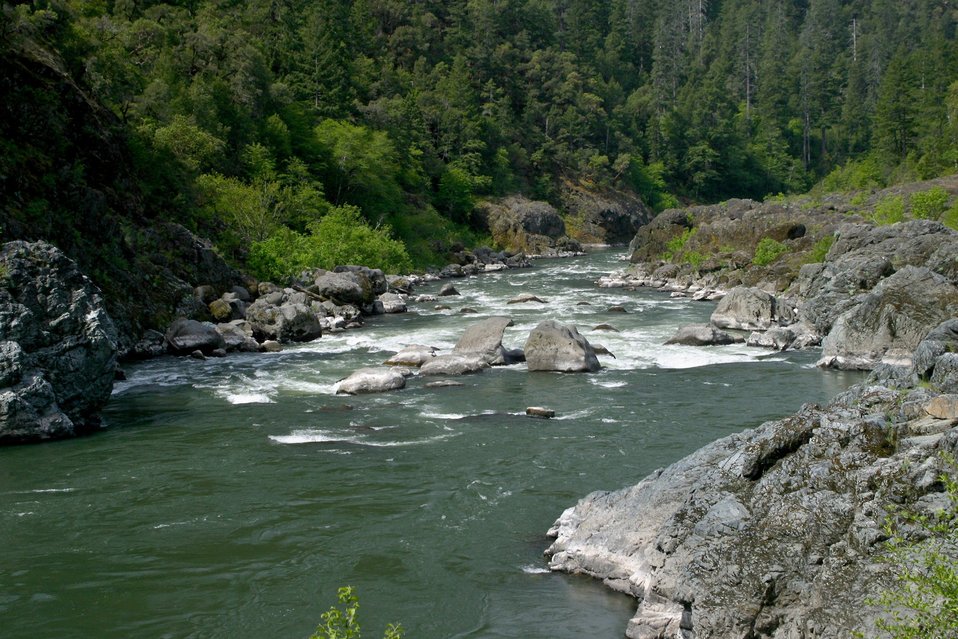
Wild section of the Rogue River from Grave Creek to Foster Bar May 19 to May 22.